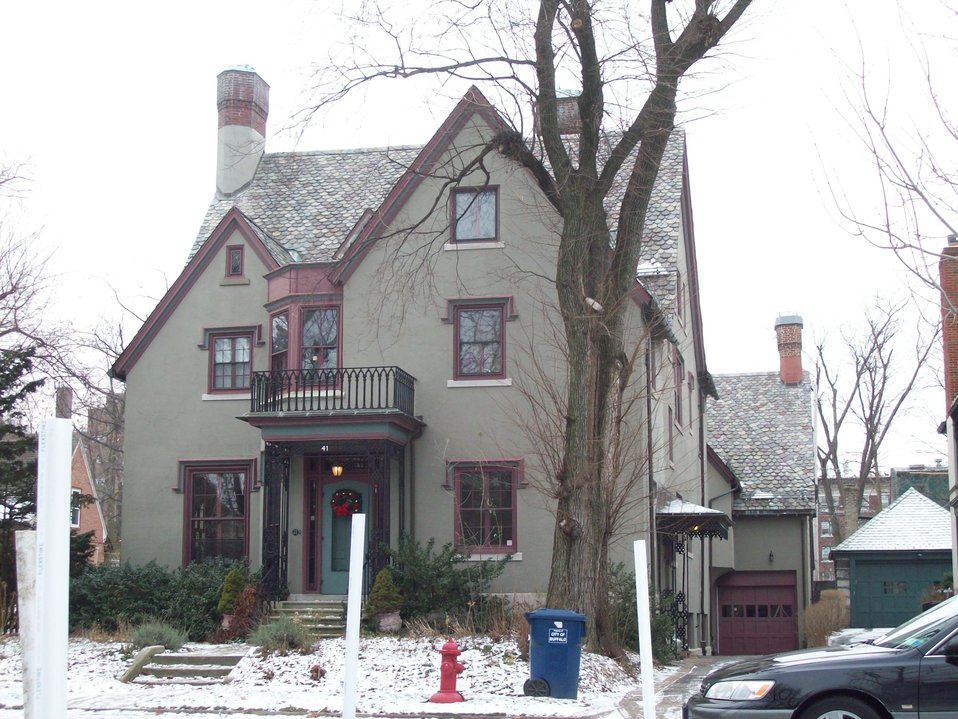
James and Fanny How House, December 2009